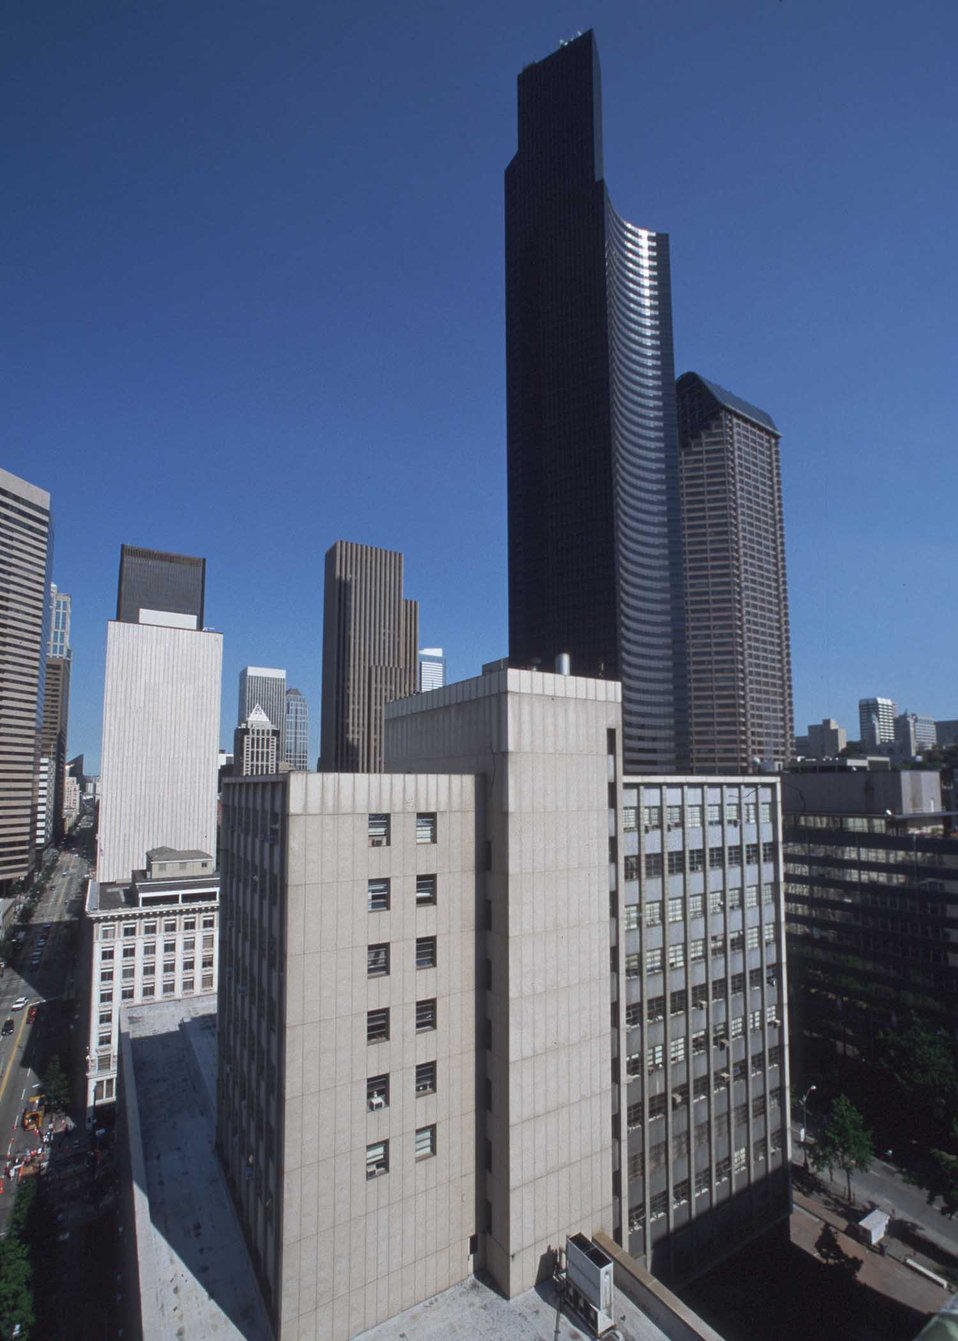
Senic view of downtown Seattle, Washington.